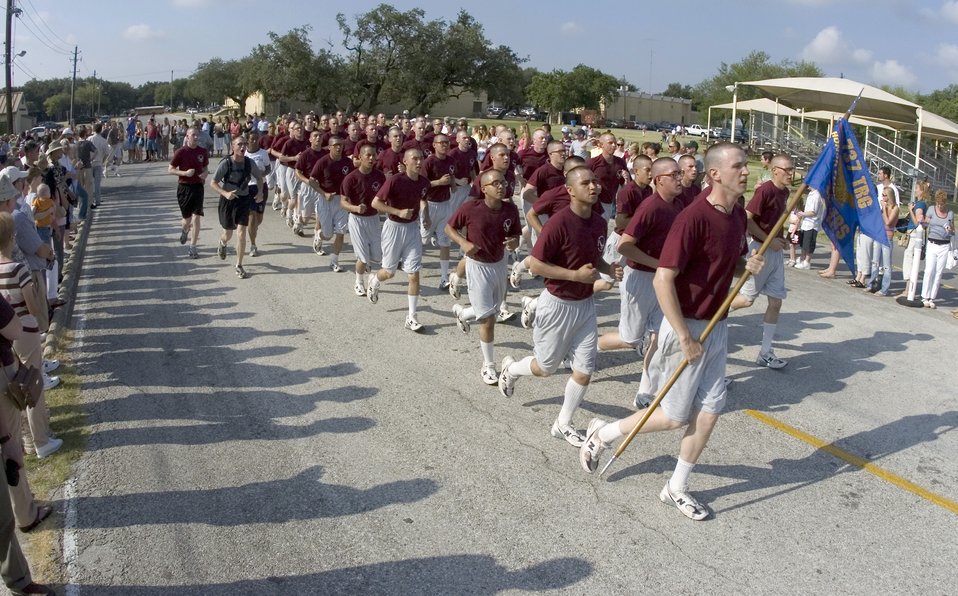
Airmen's Run

Airmen completing Air Force Basic Military Training at Lackland Air Force Base, Texas, participate in a 2.5-mile Airmen's run Thursday, June 29. The run is a victory celebration of the challenges overcome and esprit de corps gained by Airmen during training.